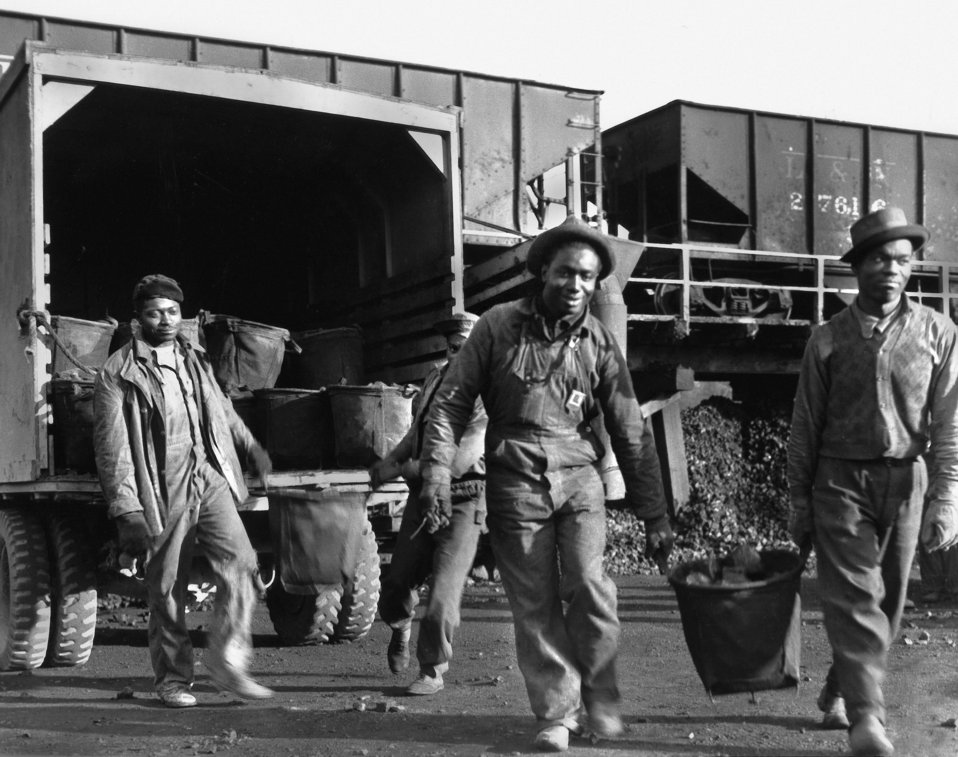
Coal Yard Oak Ridge

Pro253-1 DOE photo by Ed Westcott

Coal Yard Oak Ridge Tennessee 1/13/45